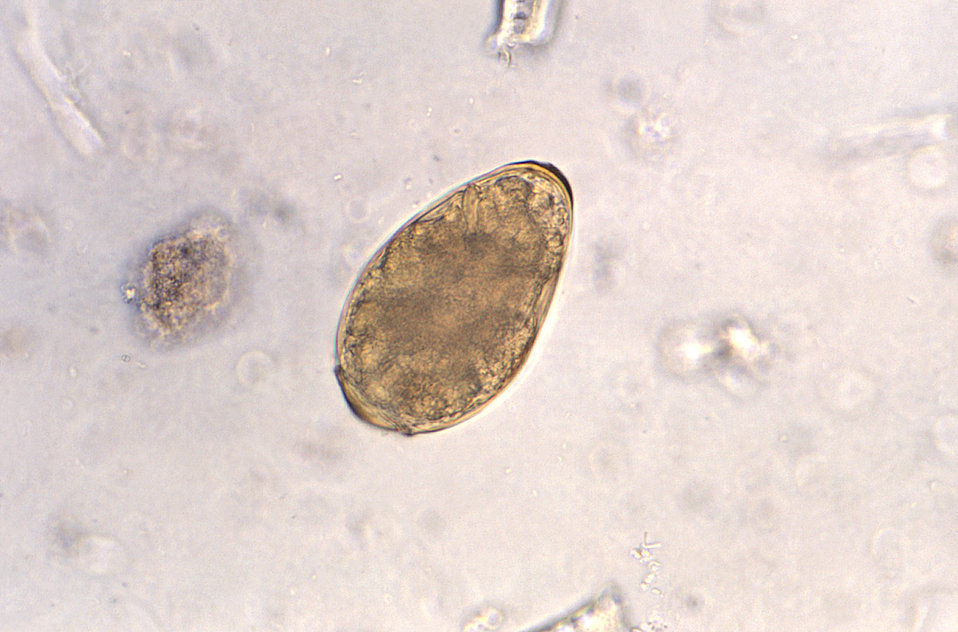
Magnified 400X, this photomicrograph revealed some of the ultrastructural morphology of a single trematode Paragonimus westermani egg. P. westermani eggs range from 80�m to 120�m long by 45�m to 70�m wide. They are yellow-brown, ovoid or elongate, with a thick shell, and often asymmetrical with one end slightly flattened. At the large end, the operculum is clearly visible. The opposite (abopercular) end is thickened. The eggs are unembryonated when passed in sputum or feces. See PHIL 10855 for another view of this egg.